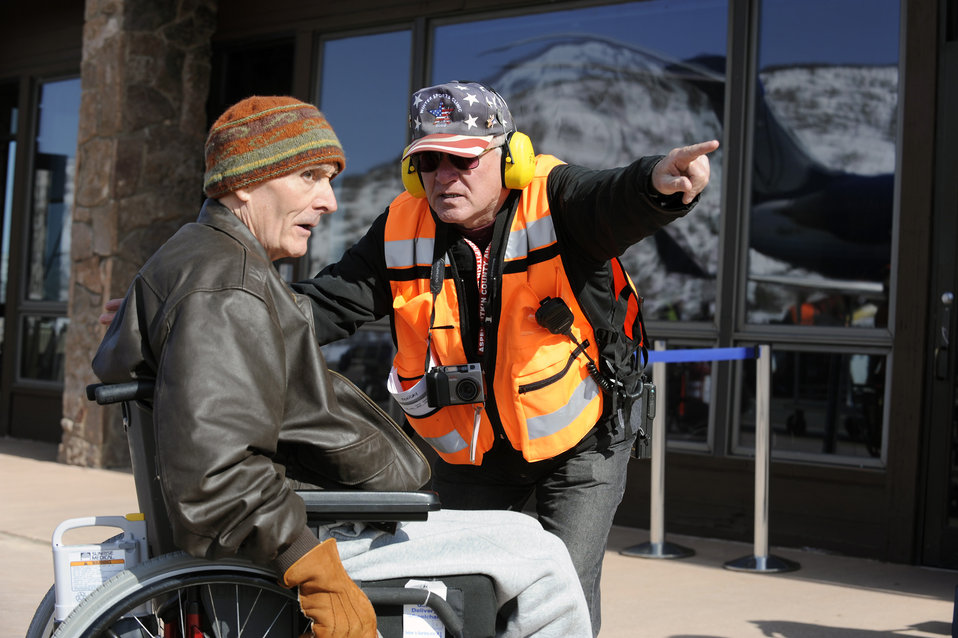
Winter rehabilitation clinic shows veterans potential

Larry Puleo guides Michael Fleuker to the baggage claim area March 28 at the Aspen Airport, Colo. Mr. Puleo is an airport employee and Mr. Fleuker is from Watertown, Wisc. This is Mr. Fleuker's second year attending the Disabled American Veterans Winter Sports Clinic.